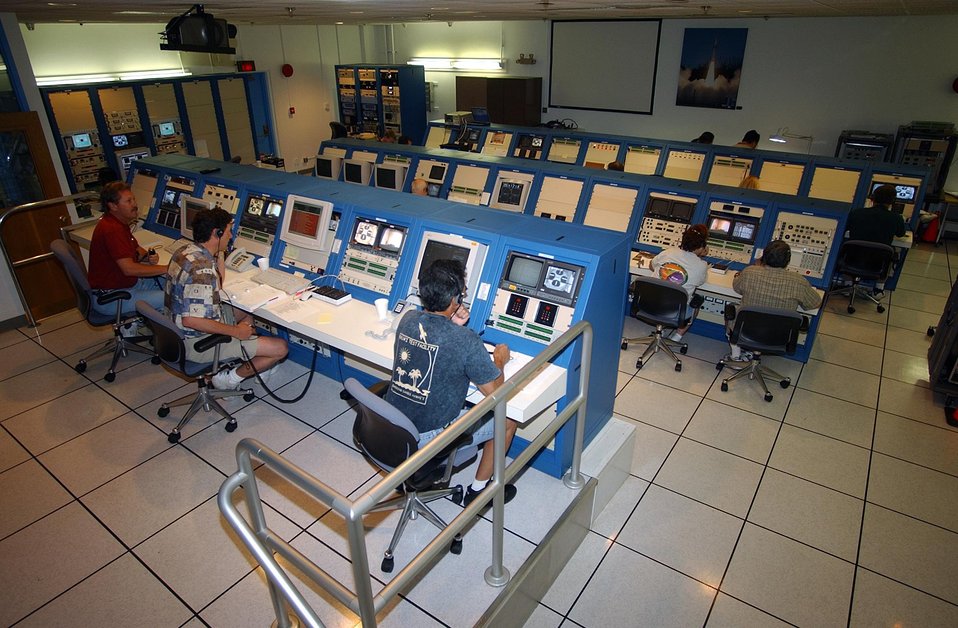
TECHNICIANS AT THE CONTROL CONSOLES IN THE CONTROL ROOM OF THE LAUNCH OPERATIONS BUILDING AT THE KAUAI TEST FACILITY.

SANDIA'S KAUAI TEST FACILITY, OPERATED FOR DOE, IS ON THE U.S. NAVY'S PACIFIC MISSILE RANGE FACILITY ON THE ISLAND OF KAUAI, HAWAII. SINCE 1962 SANDIA HAS SENT SCIENTISTS AND TECHNICIANS TO CONDUCT ROCKET FLIGHT TEST EXPERIMENTS RANGING FROM OFFENSIVE AND DEFENSIVE WEAPONS TESTING TO ATMOSPHERIC STUDIES AND HIGH TECH STAR GAZING.